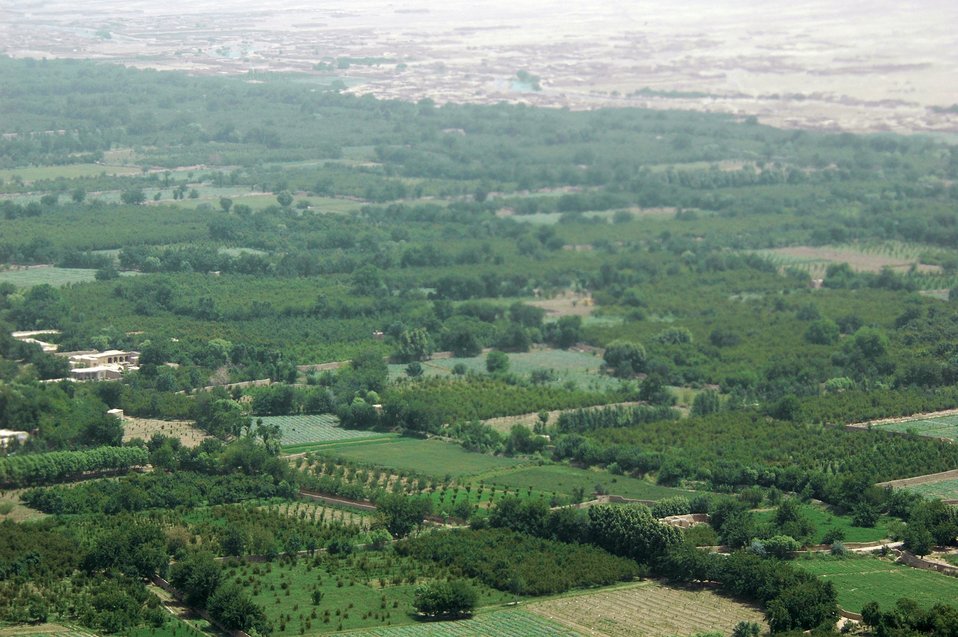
CODEL Berman